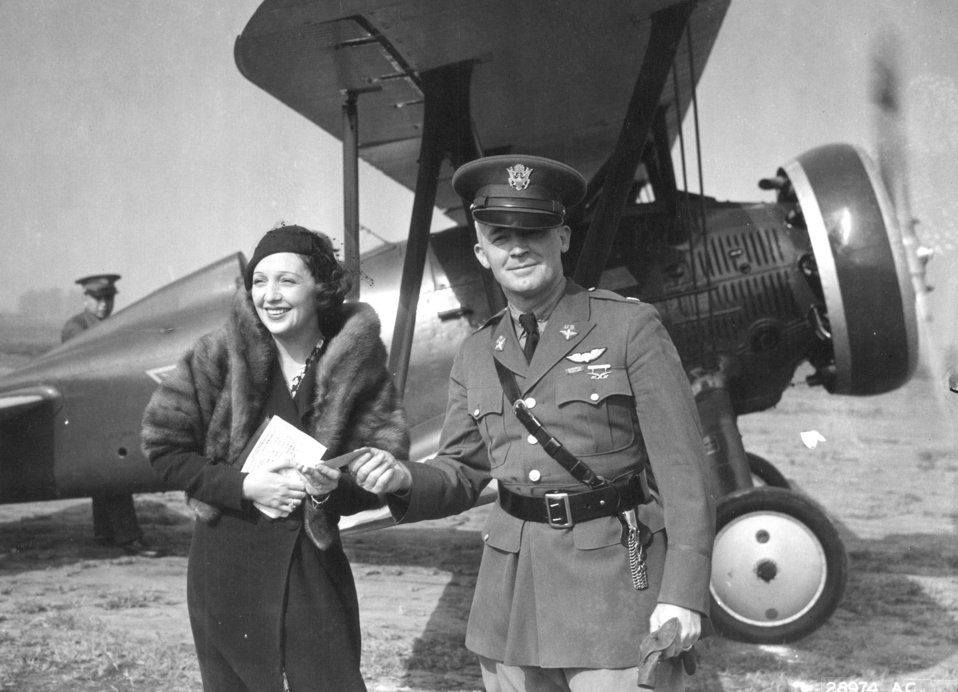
Bebe Daniels and Lt. Col. Henry H. Arnold

Early Years -- Bebe Daniels and Lt. Col. Henry H. Arnold, Long Beach, California.